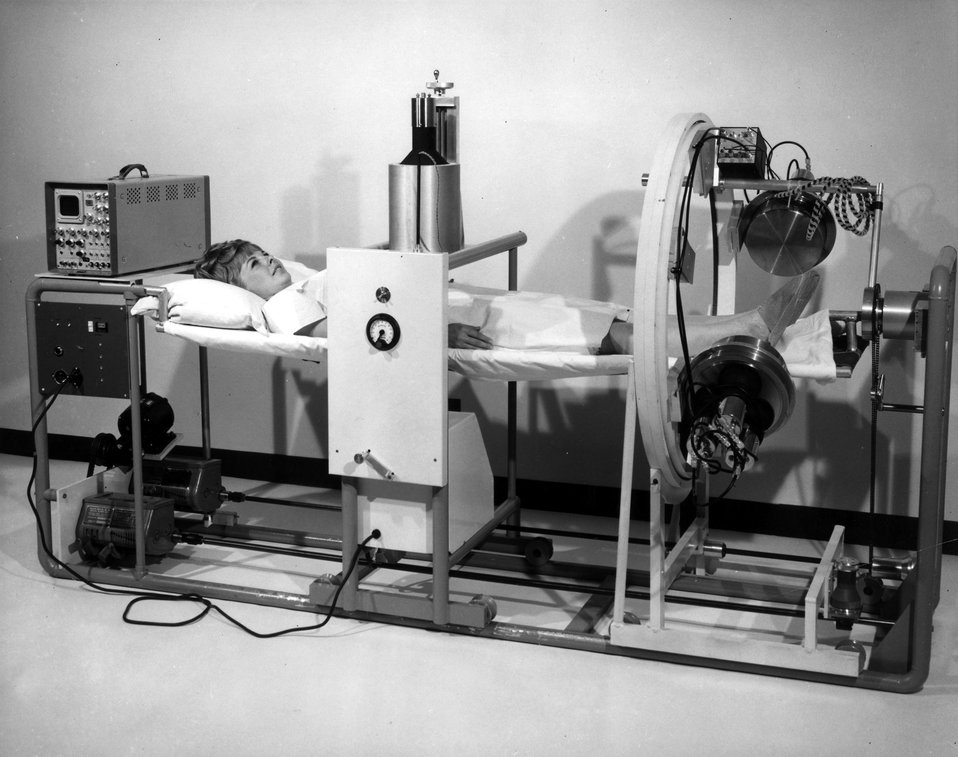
A new rotational whole body counter developed by the Atomic Energy Commission's Health Services Laboratory at the National Reactor Testing Station in Idaho, provides an improved method of pinpointing the location of gamma-emitting nuclides in the human body.